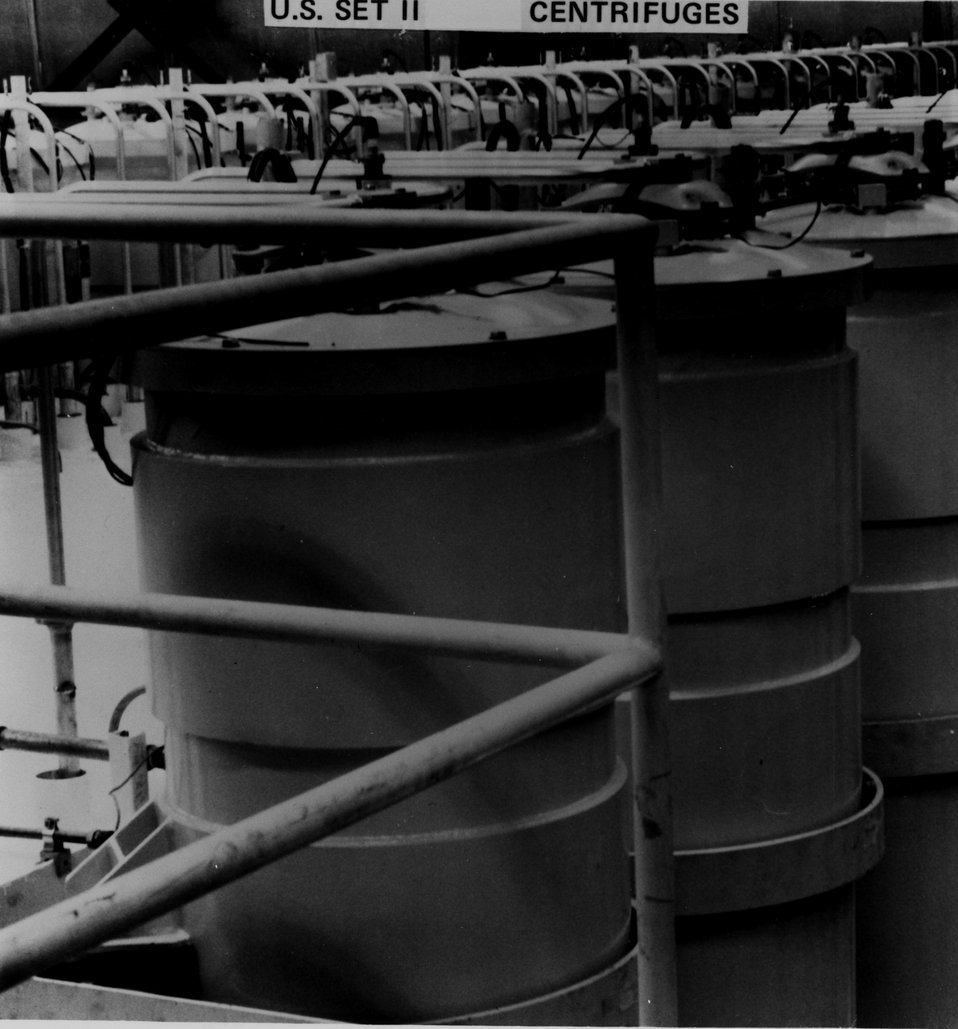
An area that holds great promises for a firm U.S. uranium enrichment supply position in the mid 1980's and beyond, is the development of gas centrifuge technology. c. 1977